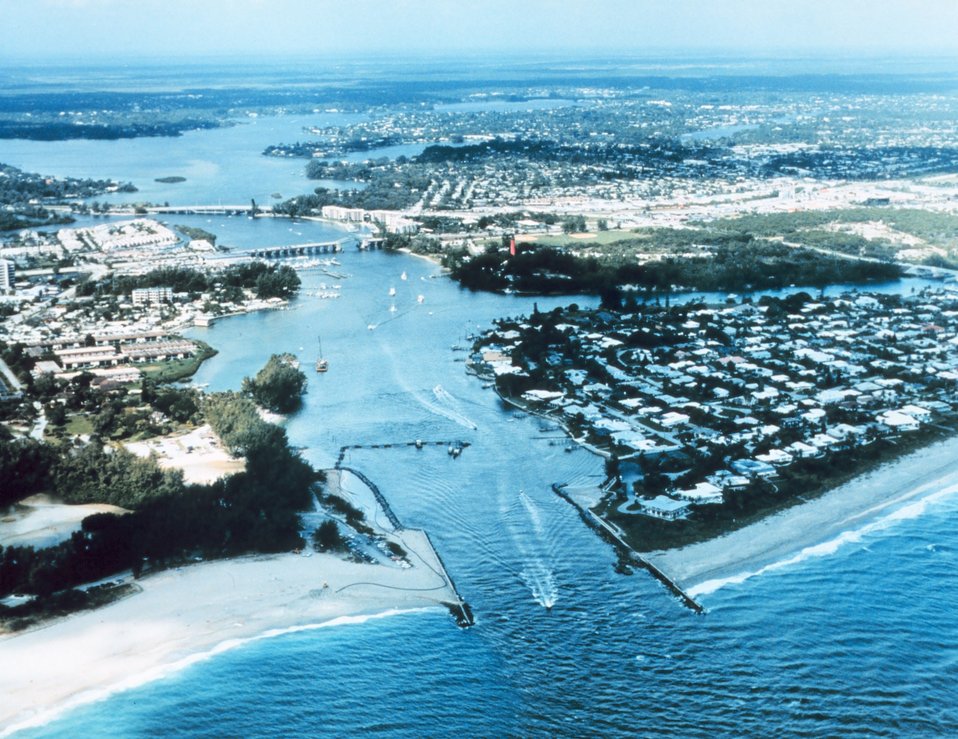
2657 North Latitude 8004 West Longitude.